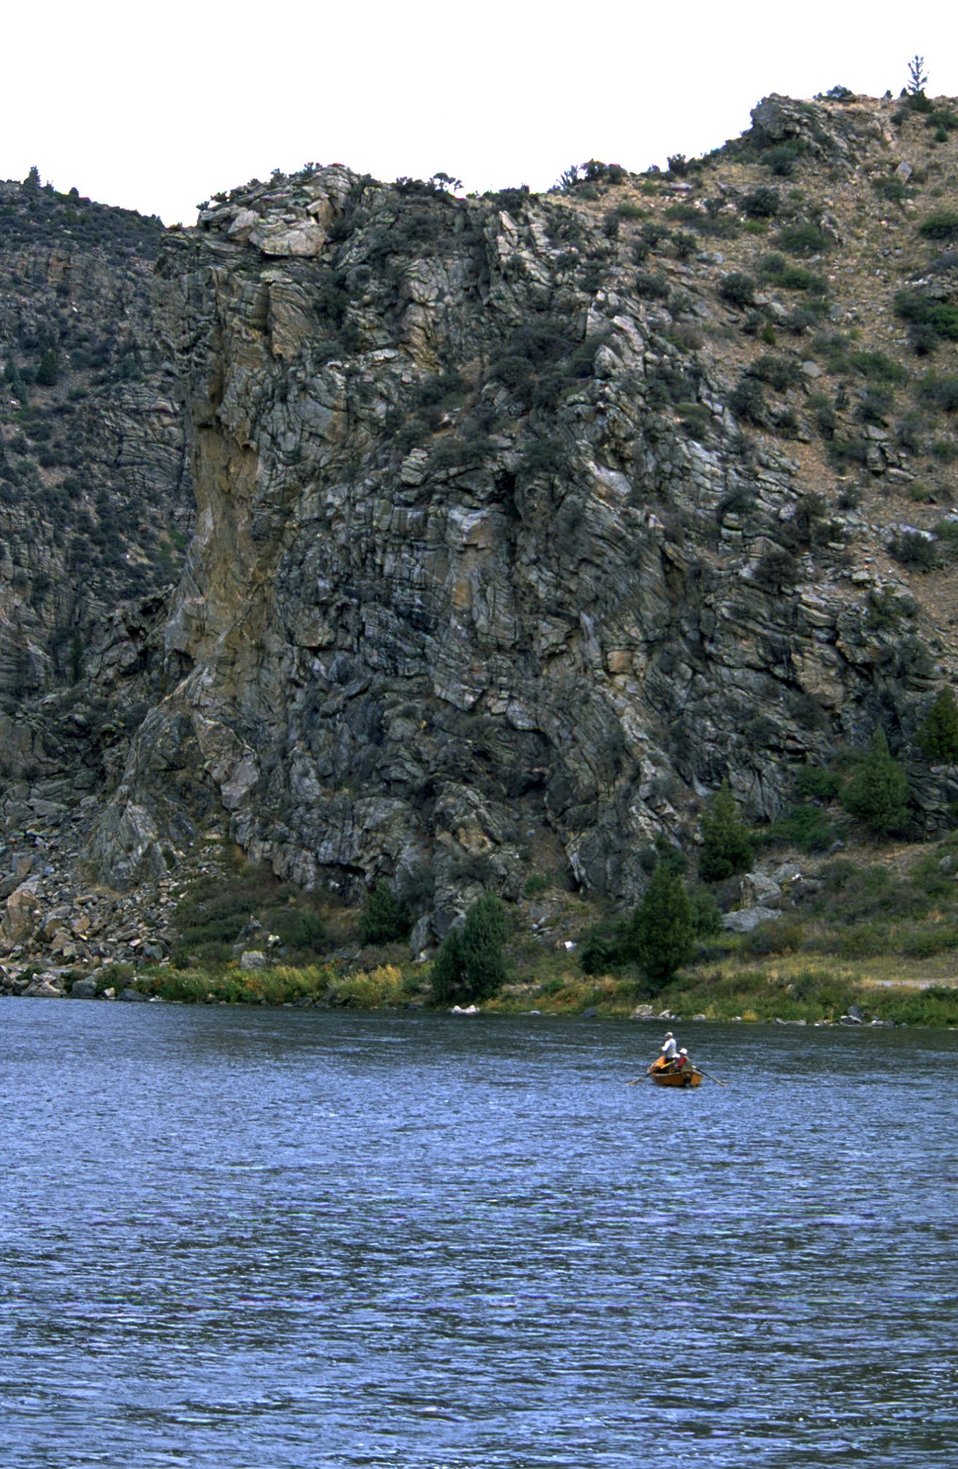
Fishing at a beautiful spot on the Madison River